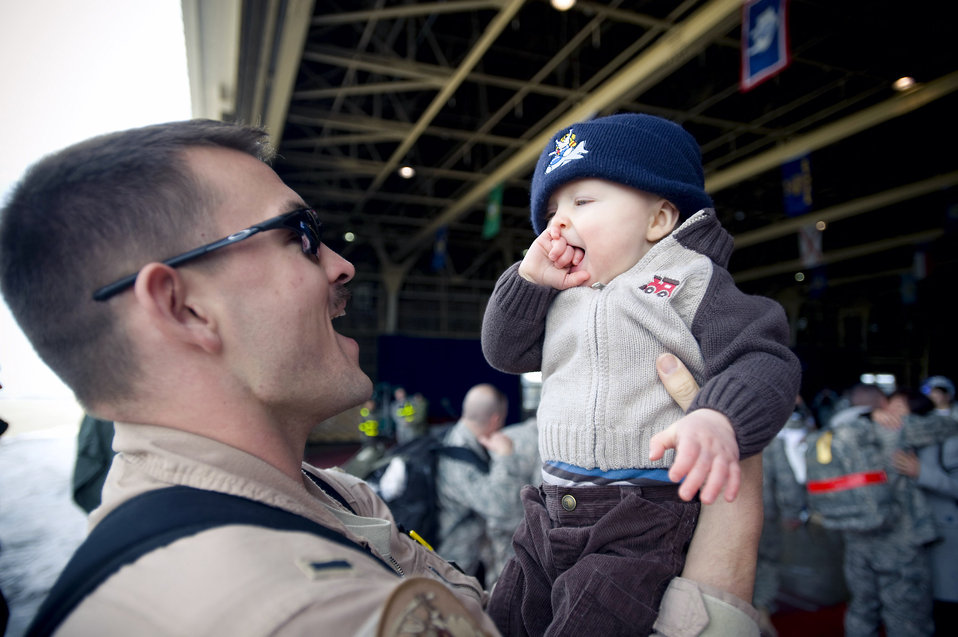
Misawa officials welcome home 300 deployed Airmen

1st Lt. Ryan Cross holds his son March 1 at Misawa Air Base, Japan. Lieutenant Cross, a 14th Fighter Squadron pilot, returned from a deployment to Joint Base Balad, Iraq. He and his family hail from Niceville, Fla.